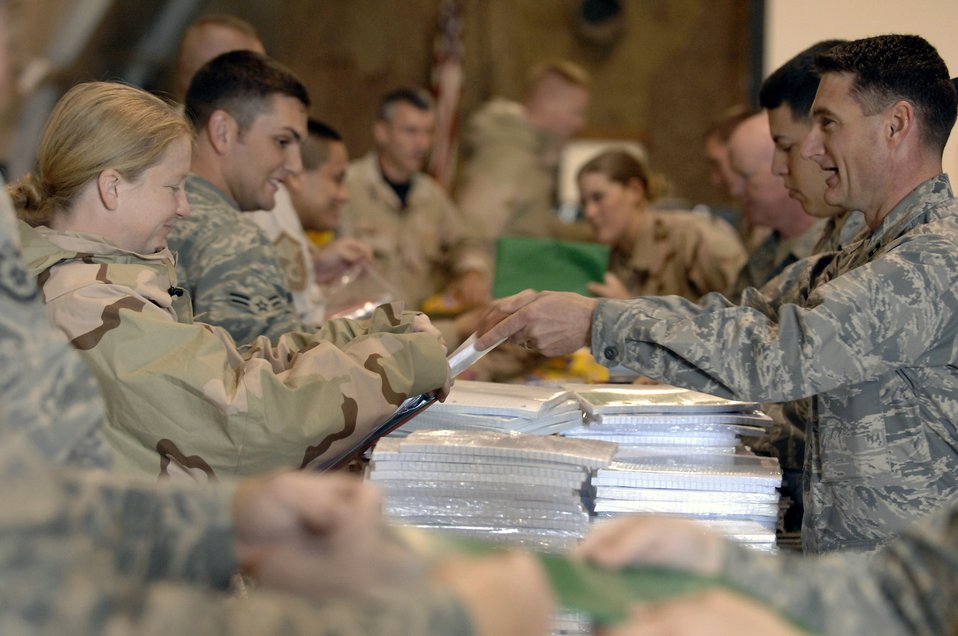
Iraqi Operation Child donations packed, ready

Chaplain (Capt.) Robert Borger sorts through packs of paper at Ali Base, Iraq, Dec. 22. The Airmen are sorting through donated school supplies and toys in support of Operation Iraqi Child led by the 407th Air Expedtionary Group Focus 5/6 and Top 3 councils. In just over a month, Airmen on base collected thousands of school supply items, soccer balls, stuffed animals and toys. The donated items will be given to Iraqi families in the An Nasiriyah area villages. Chaplain Borger is deployed from Hickam Air Force Base, Hawaii.